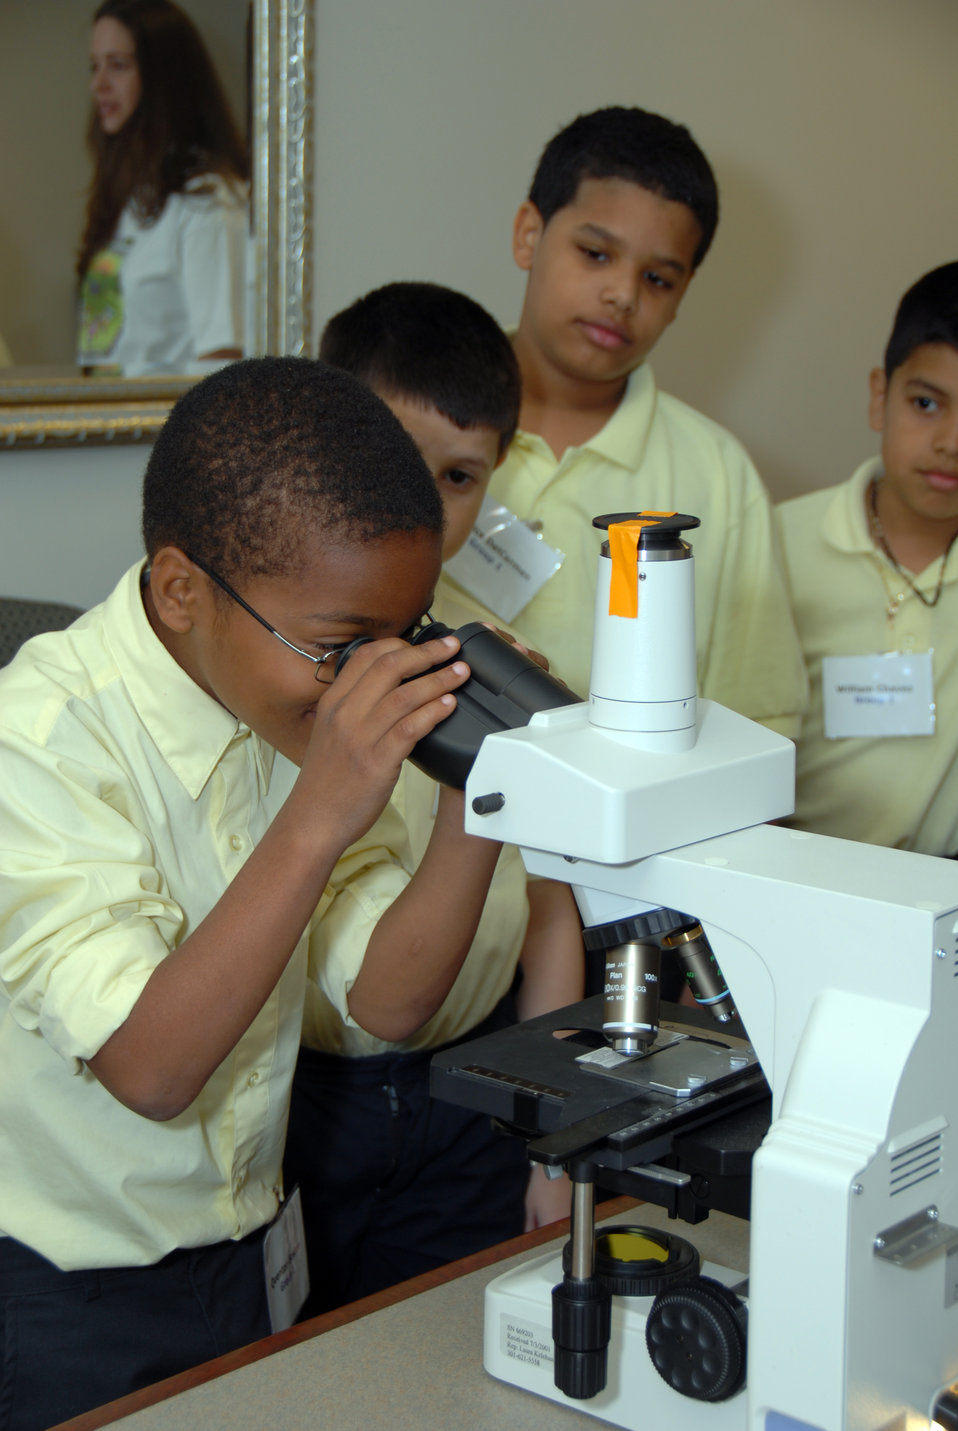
U.S. Department of Agriculture's (USDA) Food Safety and Inspection Service (FSIS) annually hosts a food safety camp that provides children with hands-on instruction about the dangers of foodborne illness and how to prevent it. This Food Safety camp was held at the USDA Beltsville, Maryland facility on May 23, 2007. Activities ranged from hand washing demonstrations with glow-in-the-dark materials to allowing children to study bacteria that can contaminate foods through a high-powered microscope.